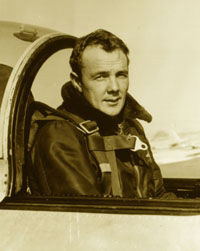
51st Fighter Wing Aces

Maj. Donald Adams became the sixth ace of the wing on May 3, 1952. After reassignment back to the U.S., he was killed in F-89 crash during a Detroit air show Aug. 30, 1952. Major Adams was assigned to the 16th Fighter-Interceptor Squadron.